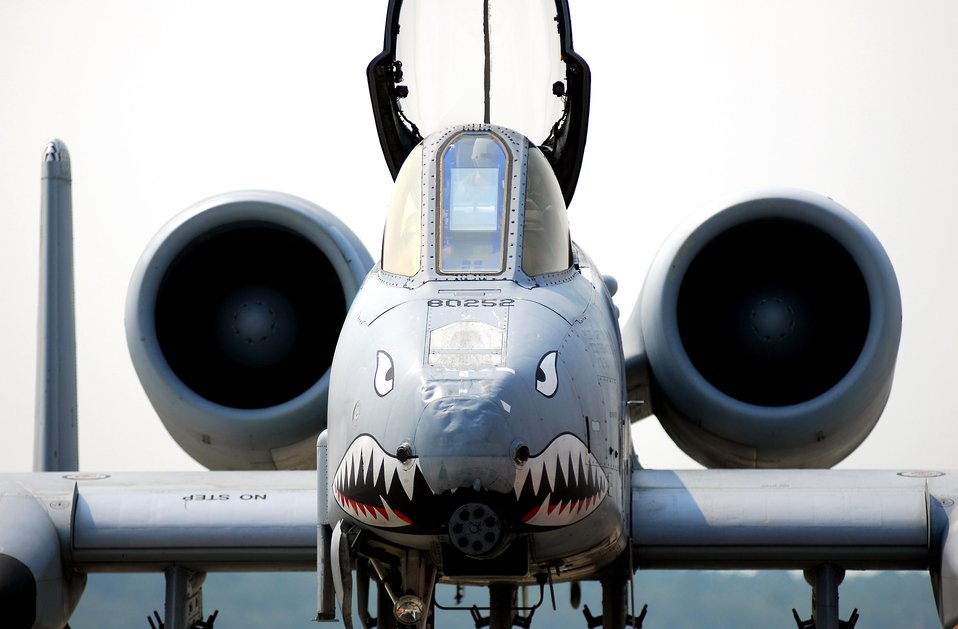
Airpower Summary for Sept. 12, 2007

A-10 Thunderbolt IIs, like this one, carried out numerous close-air-support missions Sept. 12 for coalition forces engaged in Operation Enduring Freedom operations.